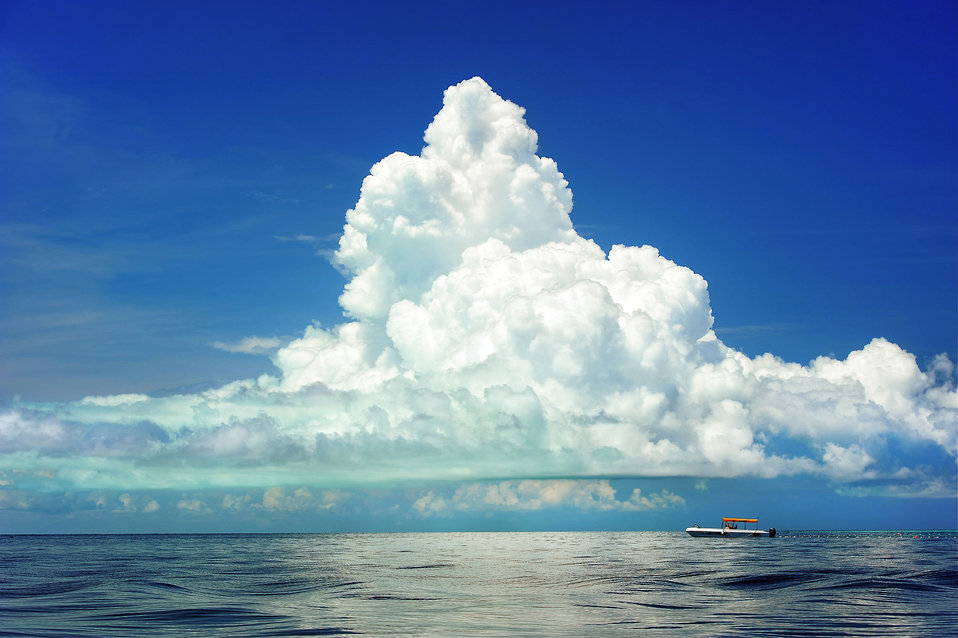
Boat under clouds

Sea at kapalai semporna sabah.